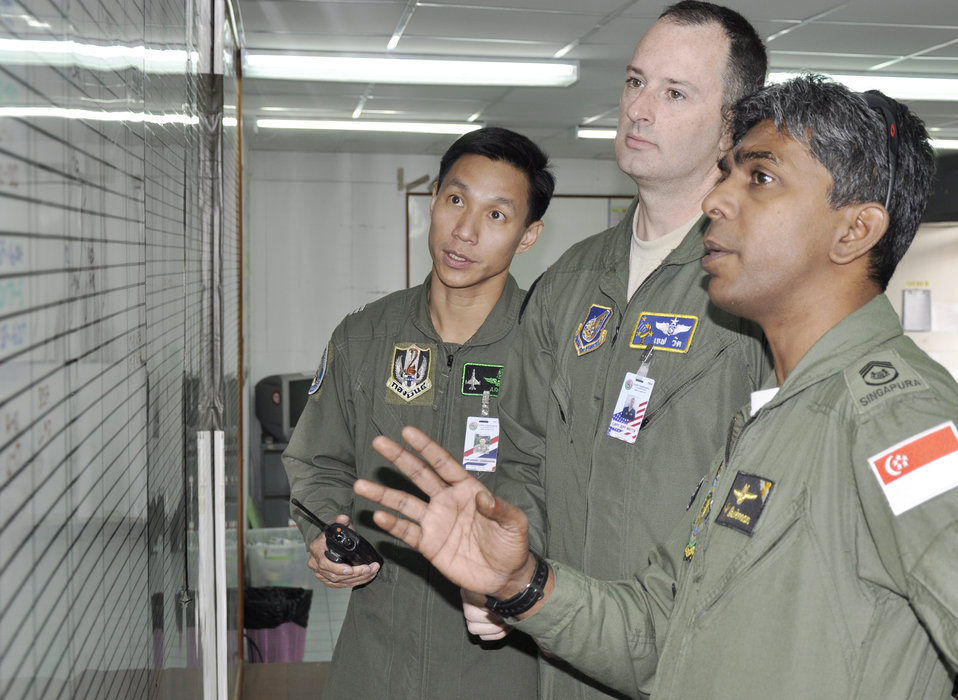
Cope Tiger 2010

Republic of Singapore Air Force Master Warrant Officer Andre Ravi, discusses scheduling issues with U.S. Air Force Capt. Jeff Watts and Royal Thai Air Force Wing Commander Arnon Charusombat March 11, 2010 during Cope Tiger 2010 in Thailand. The airmen have worked together during the past four Cope Tiger exercises deconflicting airspace issues and tracking the flying schedule.